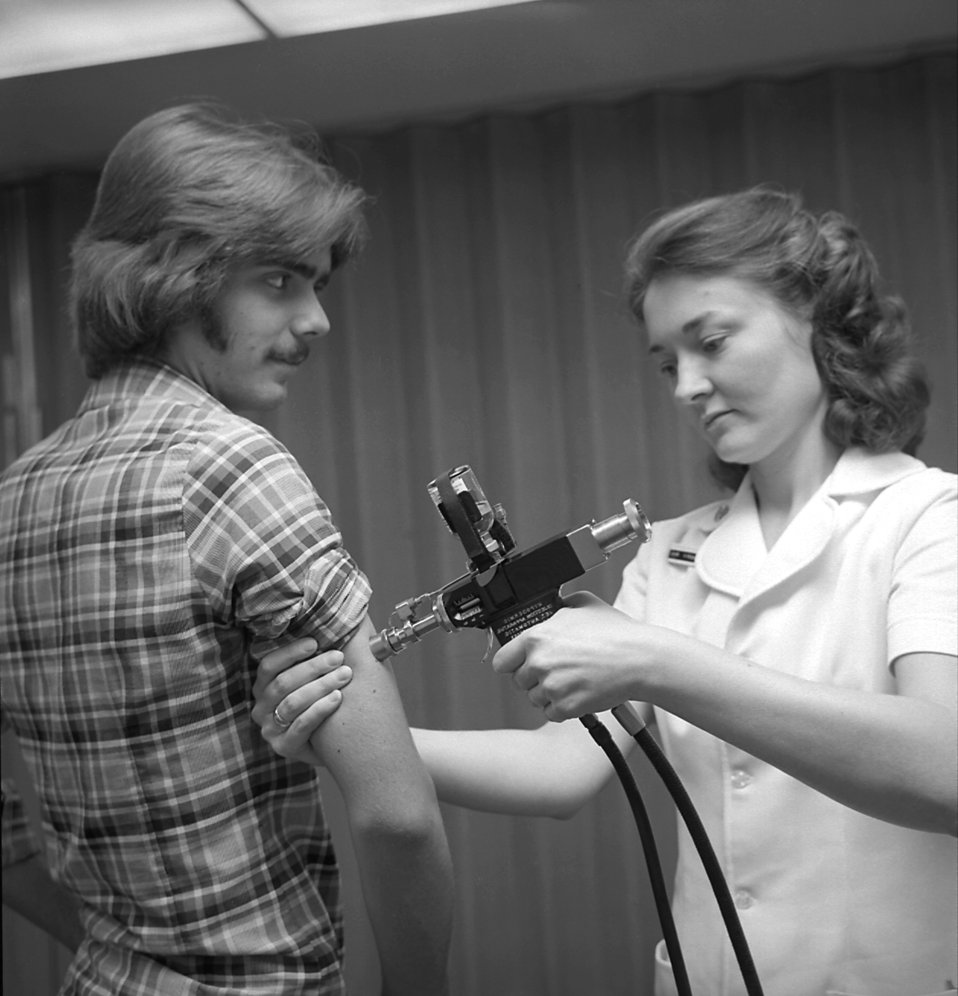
A patient being immunized using a jet injector.